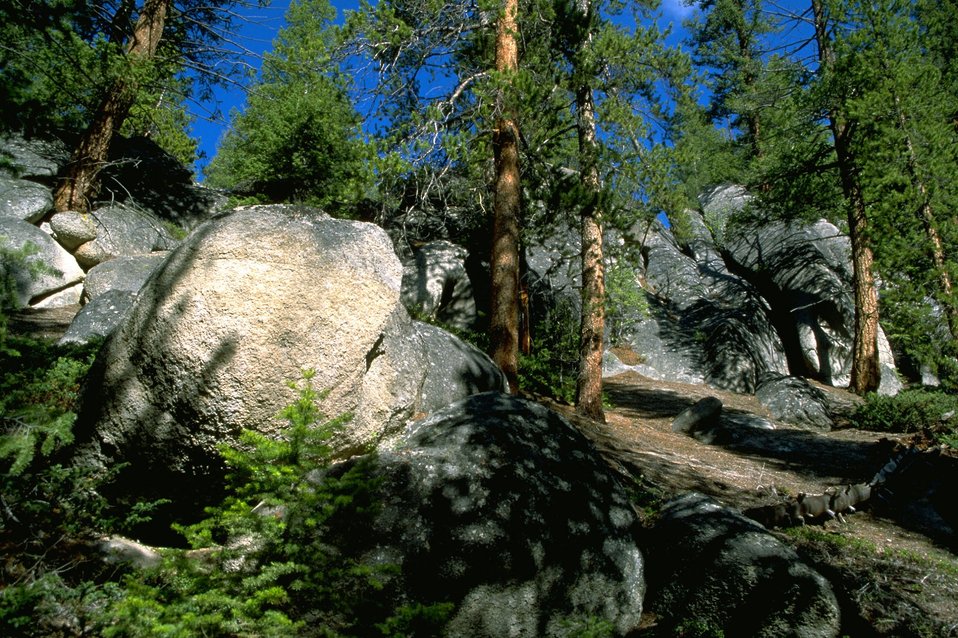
Rock formations among the trees